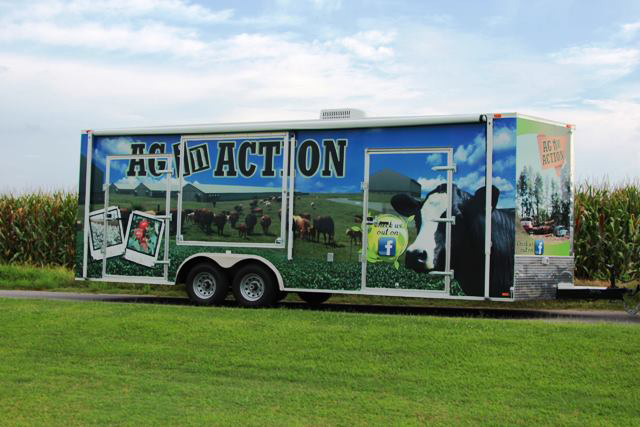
Ag In Action 2

Many partners, including the U.S. Department of Agriculture's (USDA) Natural Resource Conservation Service (NRCS) helped create the Ag in Action trailer, a traveling environmental education tool in Alabama.